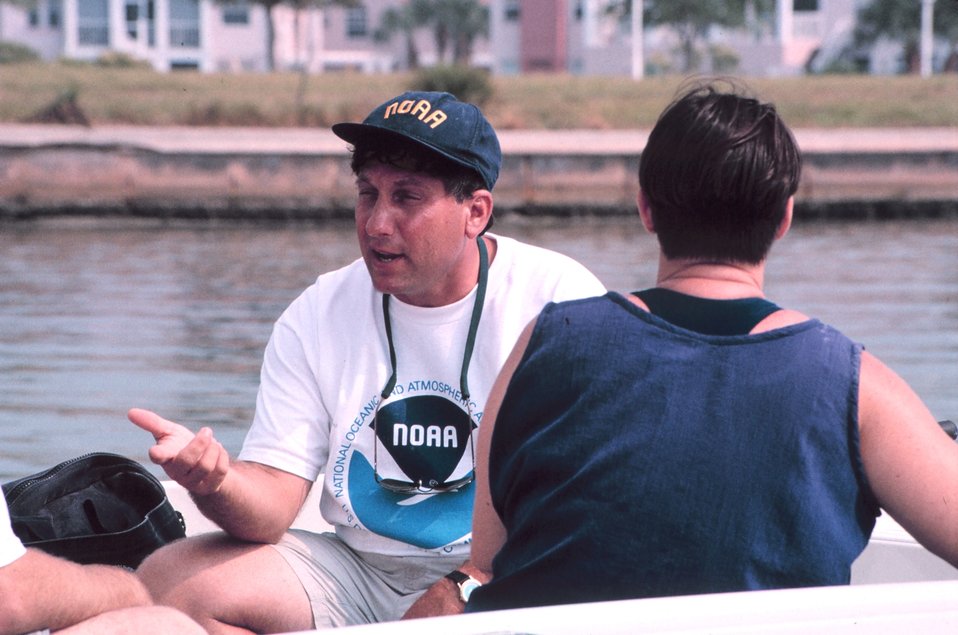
Scott Gudes and Becky Allee of NOAA prepare to begin work at the Tampa Bay monofilament clean-up.